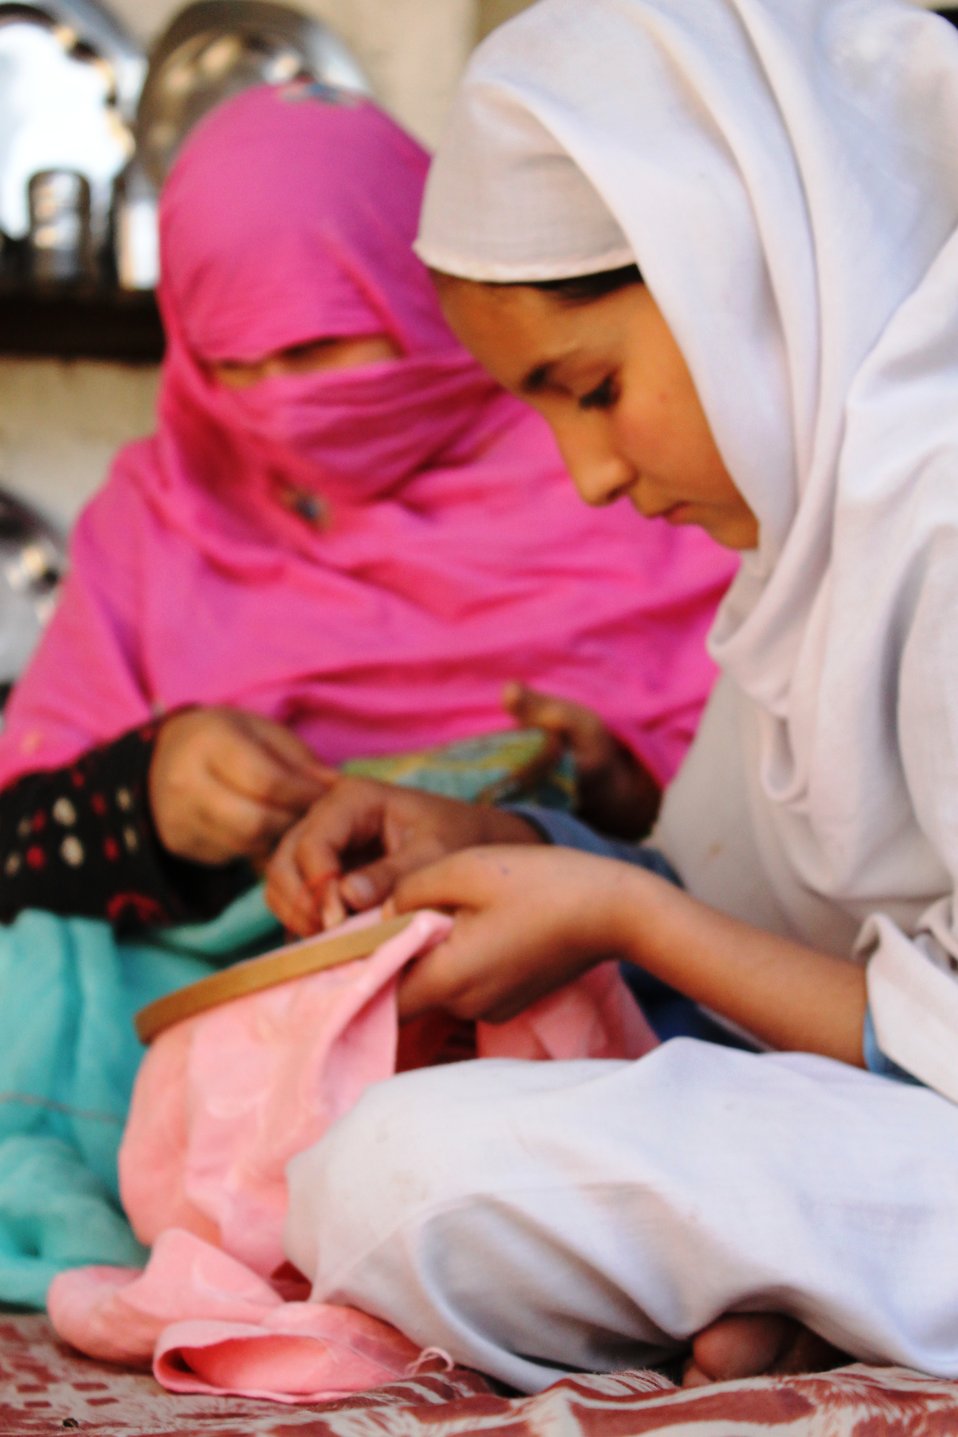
Embellished Fabrics Value Chain Development Initiative under the USAID's Entrepreneurs Project

Swat, October 18, 2012:'I help my mother with embroidery and learn new stitches from her so that I can support in bad times,' Munbeena, 12.